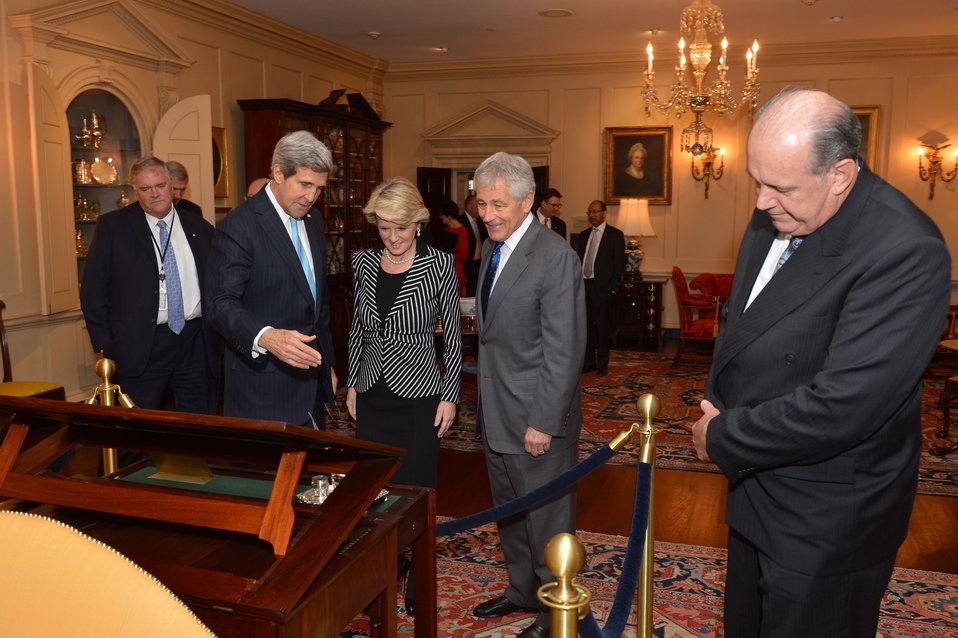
Secretary Kerry Shows Off Thomas Jefferson's Desk

U.S. Secretary of State John Kerry, with U.S. Secretary of Defense Chuck Hagel, shows Australian Foreign Minister Julie Bishop and Australian Defense Minister David Johnston the desk on which Thomas Jefferson wrote the Declaration of Independence in the John Quincy Adams State Drawing Room at the U.S. Department of State in Washington, D.C., on November 19, 2013.